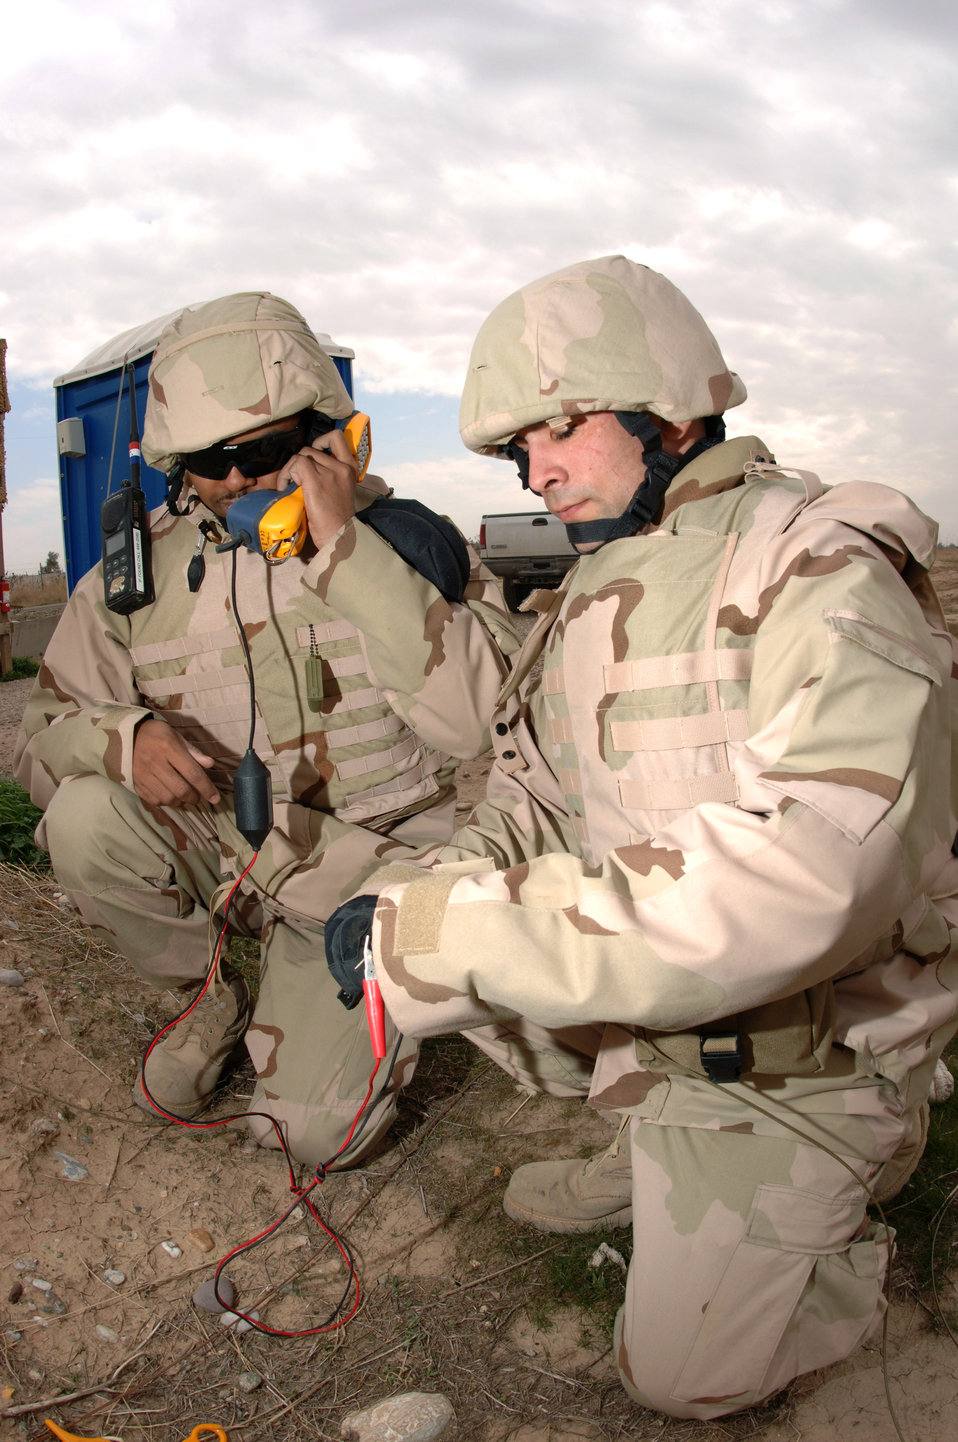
Lines of communication

Senior Airman Kenneth Hawkins and Airman 1st Class Ryan Gall tests cutfield wires for a dial tone Jan. 30 at Kirkuk Regional Air Base, Iraq. By providing communications to security forces watch towers, voice systems technicians assist with base security. Both Airmen are voice systems technicians assigned to the 506th Expeditionary Communications Squadron.